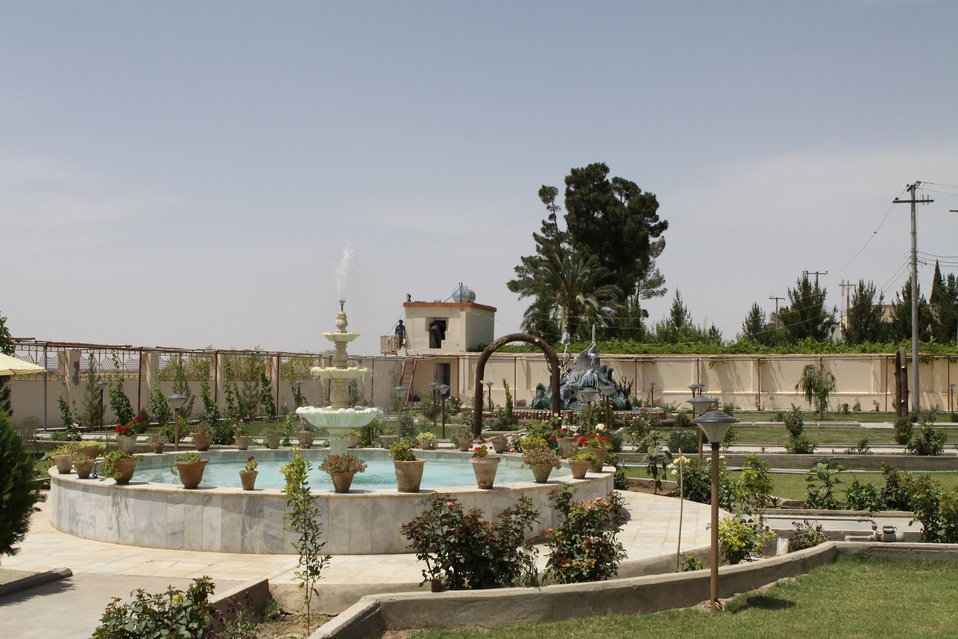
Bolan Poultry Farm